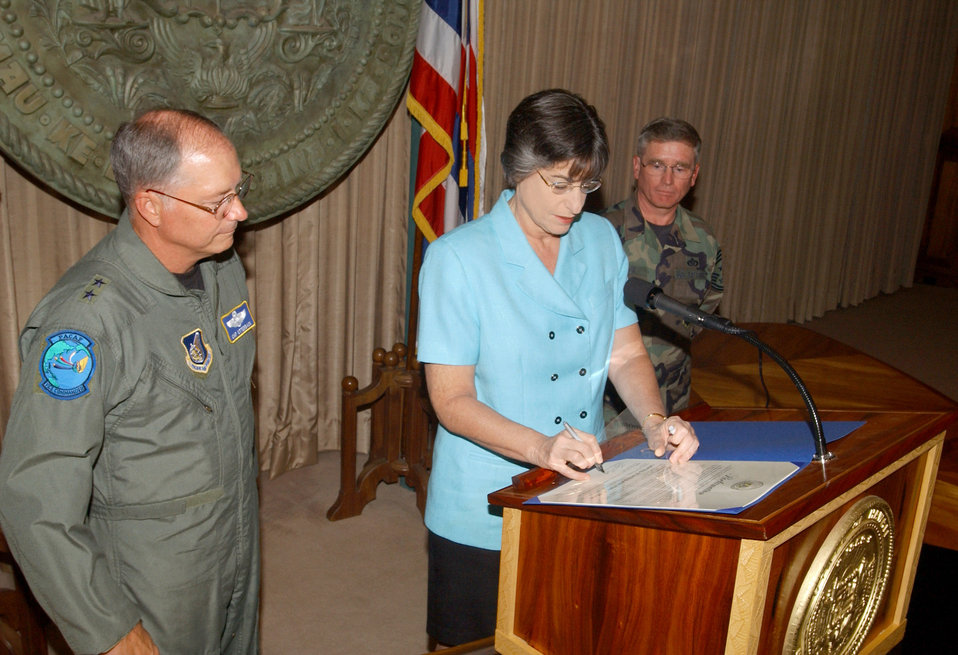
Special proclamation

Maj. Gen. Loyd S.